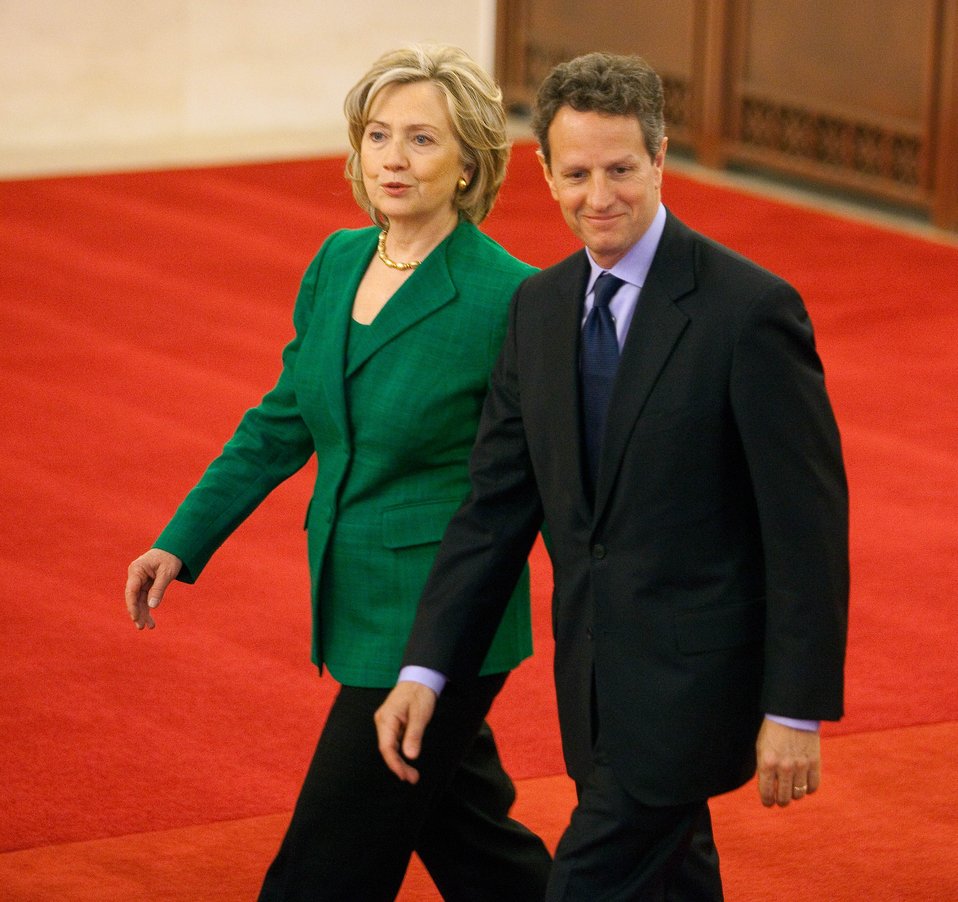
SandED, 5/24/10

Secretaries Geithner and Clinton arriving at the Great Hall of the People for the opening session of the Strategic and Economic Dialogue in Beijing.